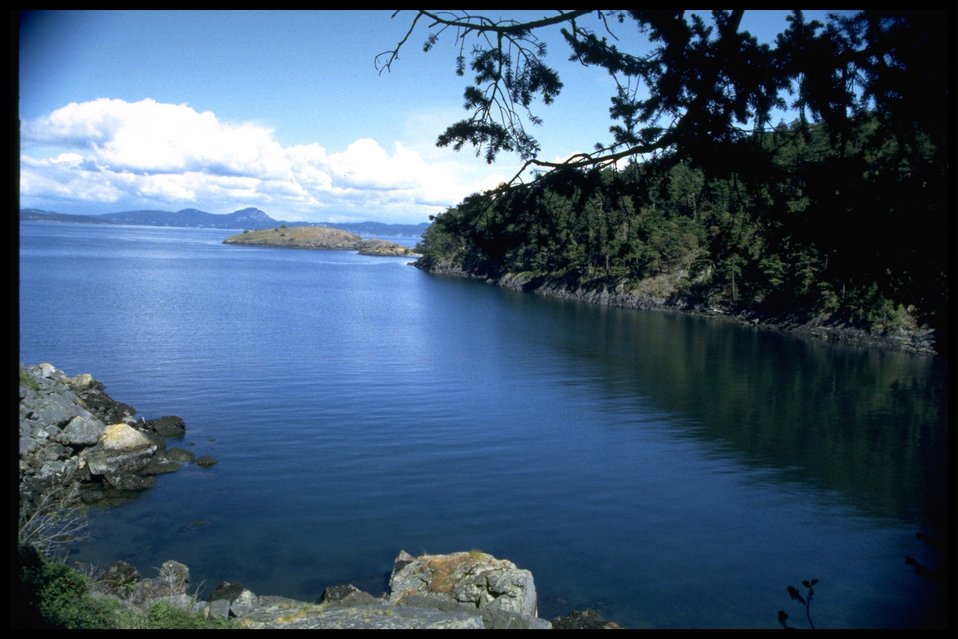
Watmough Bay.